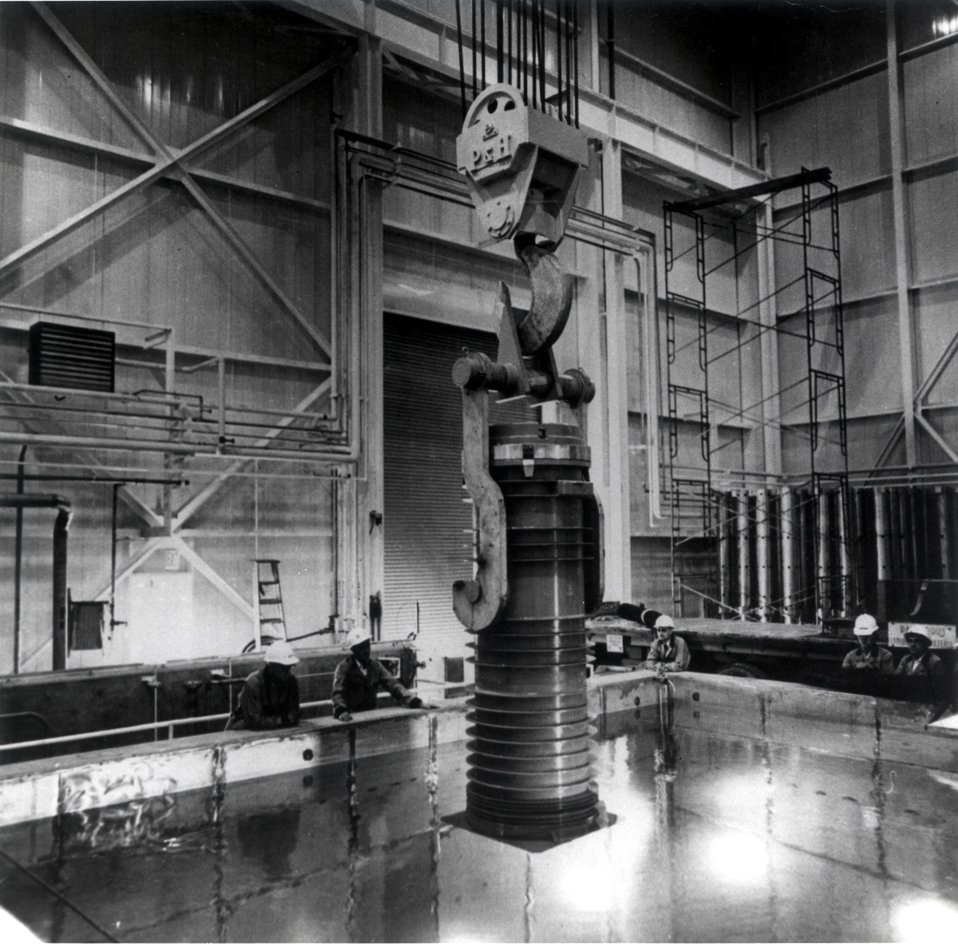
A 23-ton cask containing a single fuel element from the Yankee Atomic Electric is lowered into the unloading pool at Nuclear Fuel Services (NFS) reprocessing plant at West Valley, New York. It was the first such shipment to be received at private industry's first nuclear reprocessing plant. Commercial operation of the $28 million NFS project began in January 1966. Circa 1966.